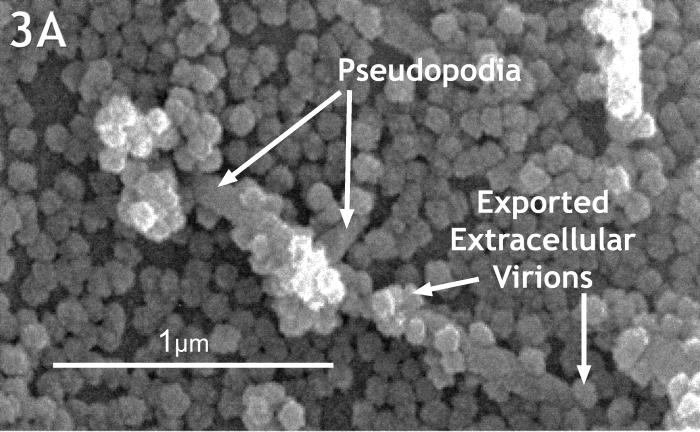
This scanning electron micrograph reveals the prolific exportation of virus particles at the pseudopodial and cell surfaces.